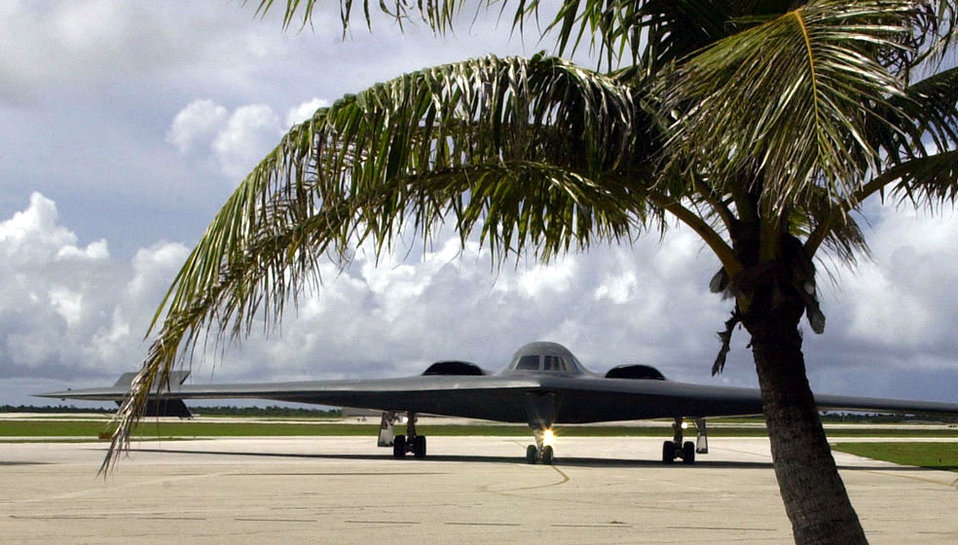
Pacific breezes

A B-2 Spirit taxis into place on the flightline at Andersen Air Force Base,Guam Sept. 17 after an 18-hour flight from its home at Whiteman AFB, Mo. Two B-2s and about 100 Airmen from the 509th Bomb Wing are at Andersen AFB for a bomber training exercise. Andersen is a forward-operating location for bombers and is a key player in the Air Force's global power projection.